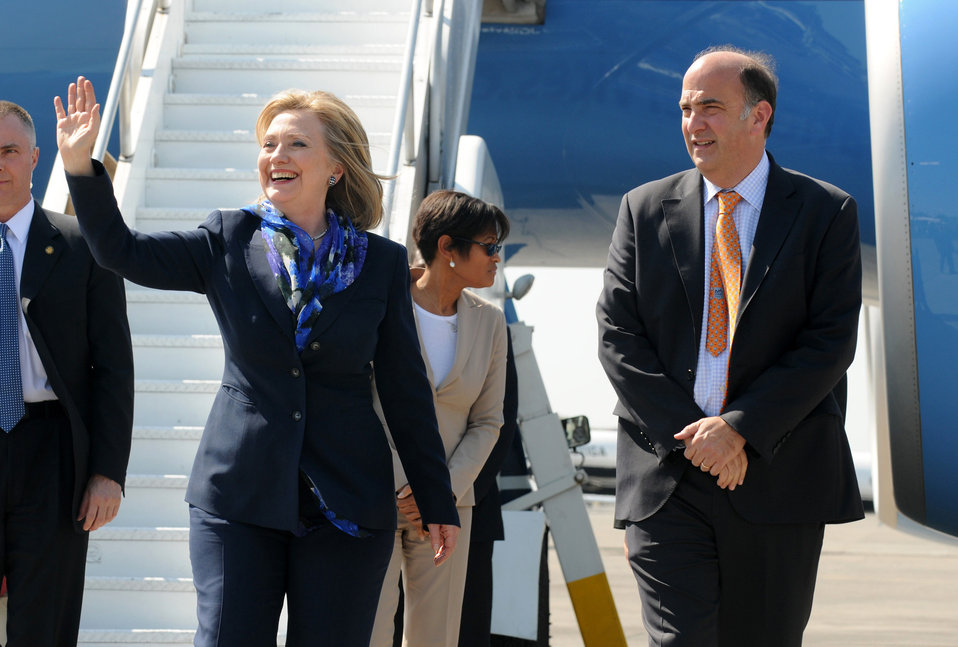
Secretary Clinton Is Greeted By Ambassador Merten

U.S. Secretary of State Hillary Clinton is greeted by U.S. Ambassador to Haiti Kenneth H. Merten, right, upon her arrival to Port-au-Prince, Haiti, on January 30, 2011.